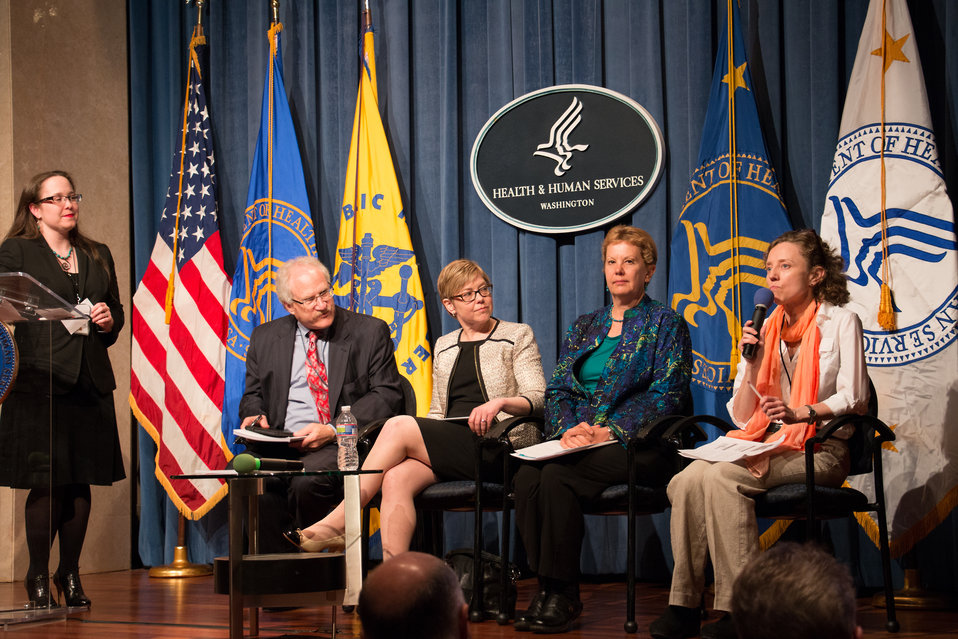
VHAP Launch (246 of 511)